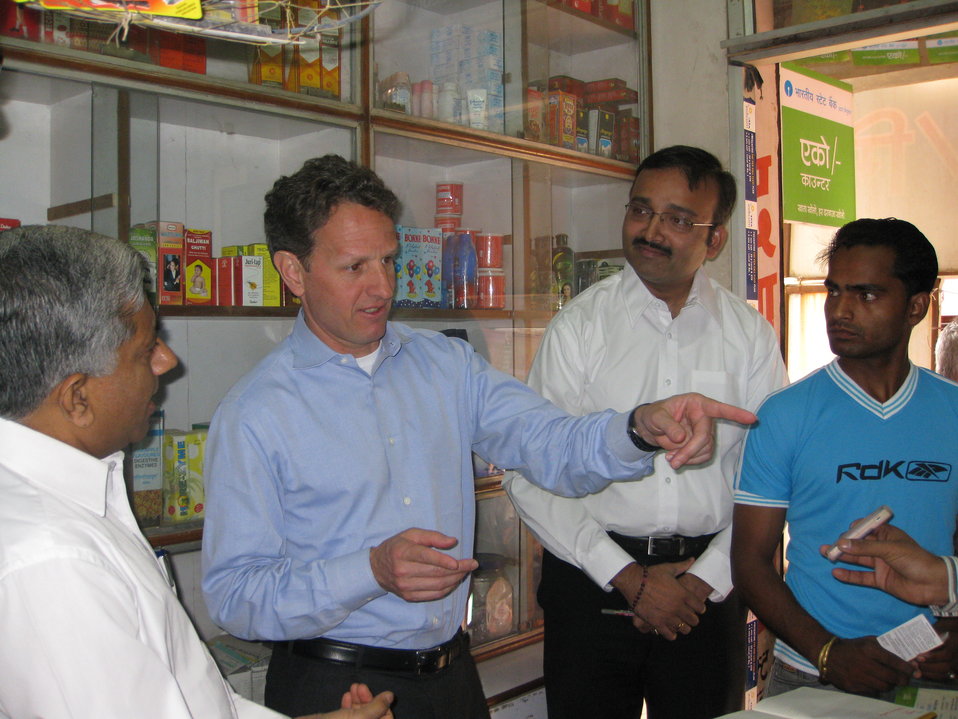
Secretary Geithner in India, 4/6/10

Secretary Geithner talking to customers at a mobile banking counter on April 6, 2010 in Samalkha, a village outside Delhi, India. The center is run by Eko, a nonprofit organization offering “branchless banking,” in collaboration with the State Bank of India.